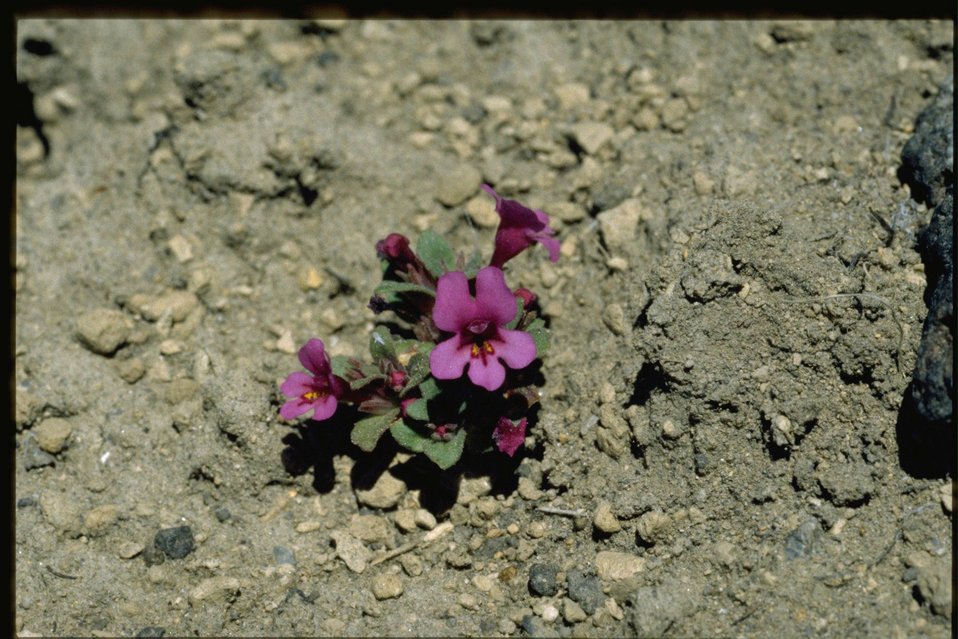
Far shot of violet habitat.